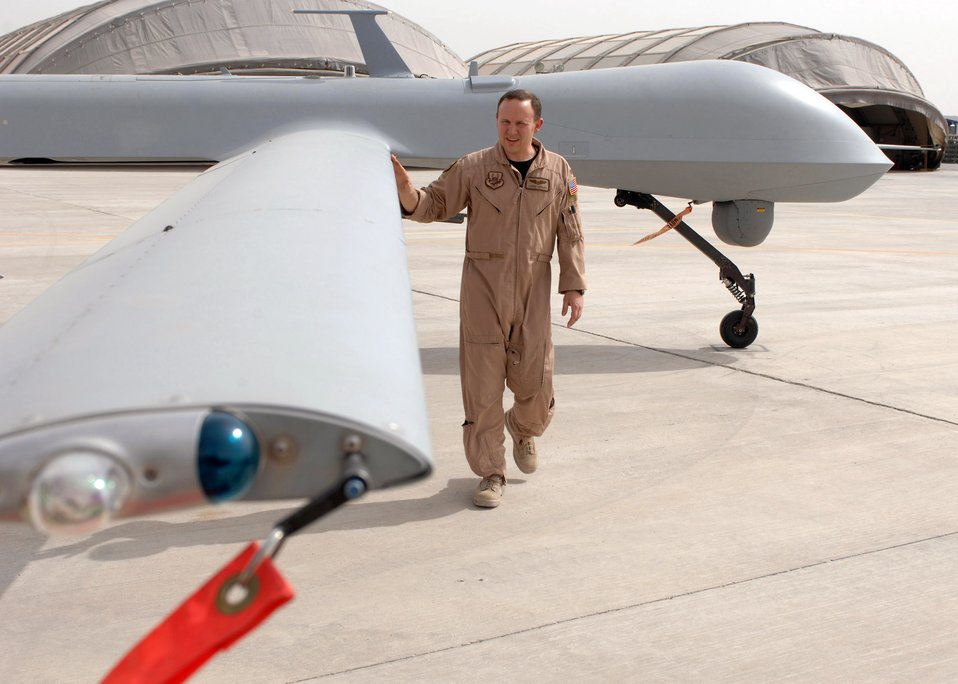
Predators of the mountains

Maj. Lichen Pursley, the 62nd Expeditionary Reconnaissance Squadron commander, performs a pre-flight inspection on an MQ-1 Predator at Bagram Air Base, Afghanistan, before a combat mission. The unit's primary role is to launch and recover Predators supporting Operation Enduring Freedom.